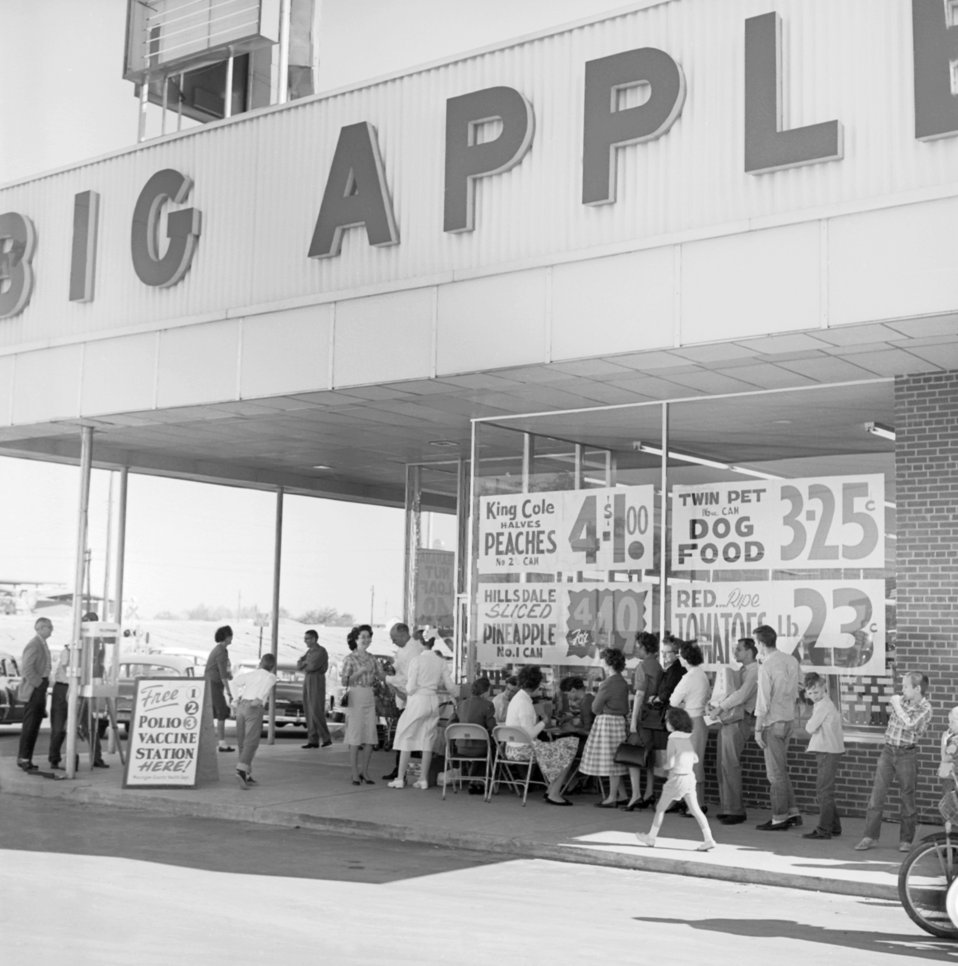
People standing in line at a polio immunization station outside a local grocery store in Columbus, Georgia, 1961.